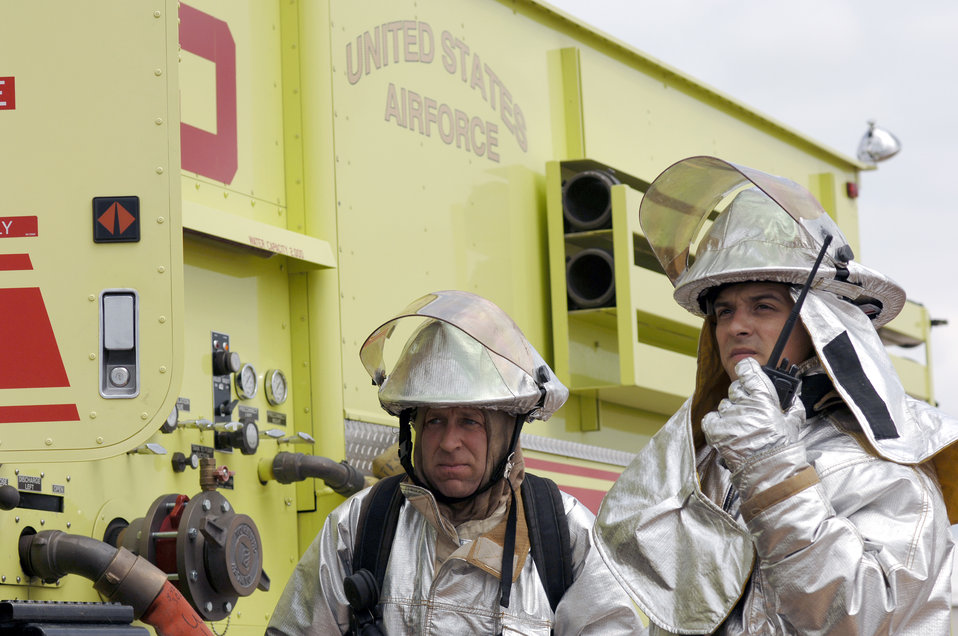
Firefighter training

Staff Sgt. Mike Lee and Senior Airman Kim Wathen maintain communications with their team during an aircraft fire exercise on Sunday, May 7, 2006, in Tulsa, Okla. They are assigned to the Air National Guard's 138th Civil Engineer Squadron in Tulsa.